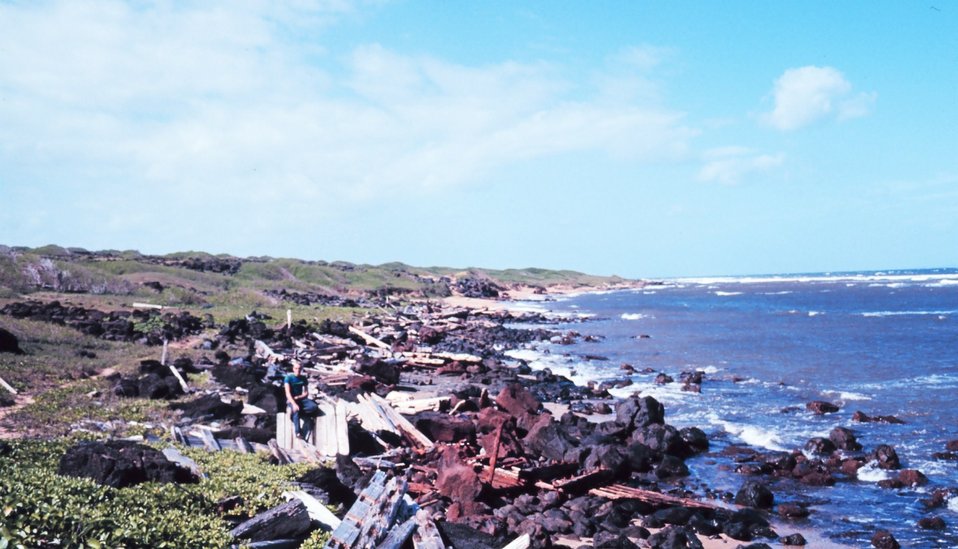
Shipwreck Beach